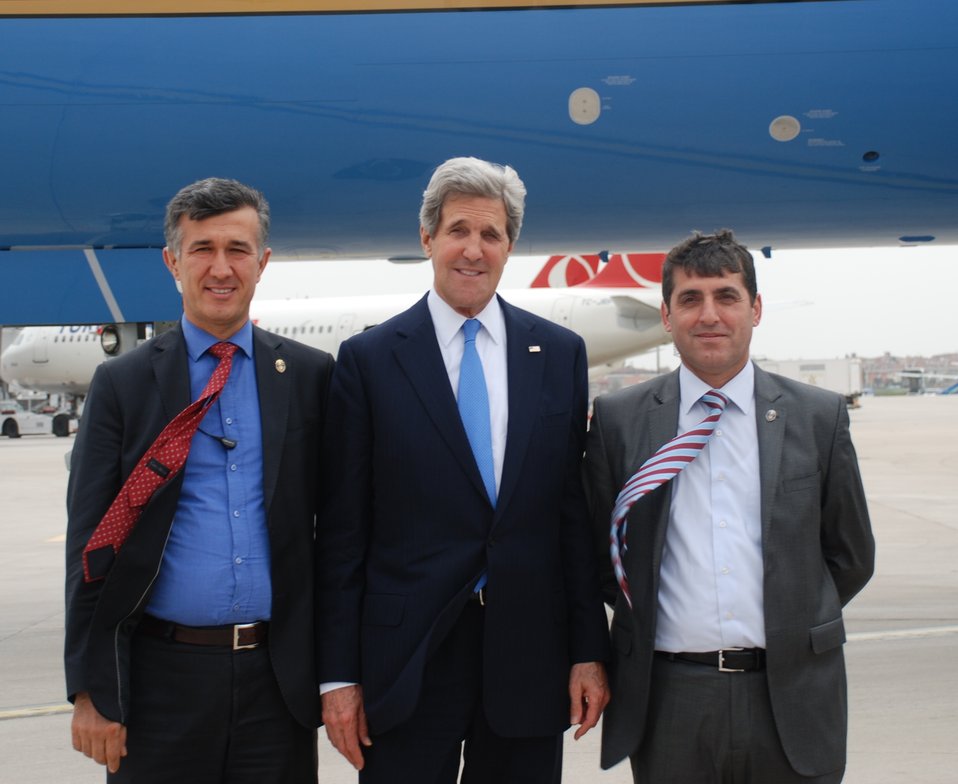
Secretary Kerry With Turkish National Police in Istanbul, Turkey

U.S. Secretary of State John Kerry poses for a photograph with Turkish National Police members before his departure at Atatürk Airport, Istanbul, Turkey, April 7, 2013.